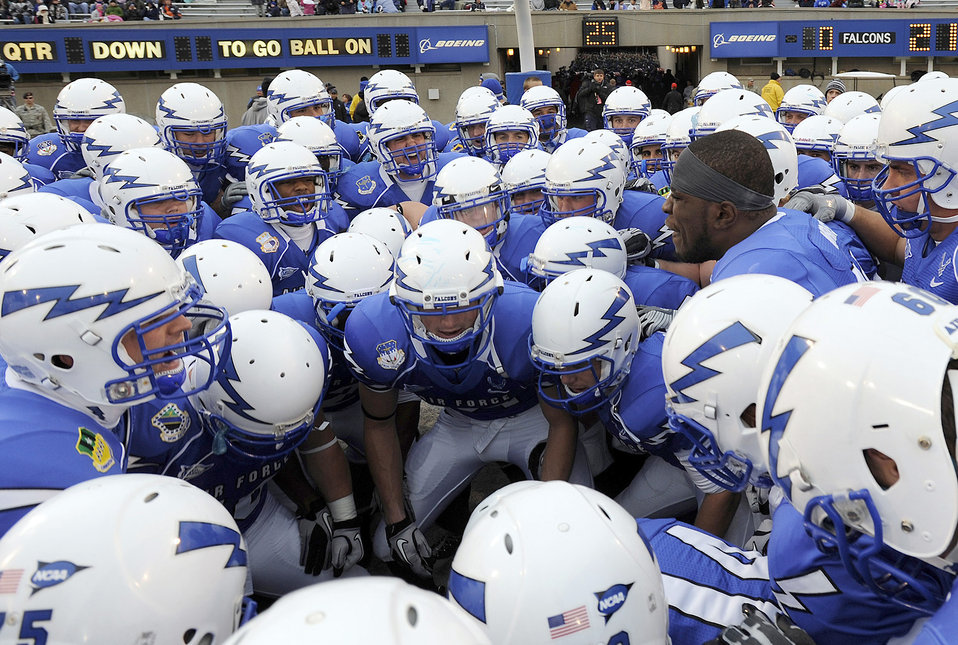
Let's huddle

Senior linebacker Andre Morris leads the Air Force Falcons in a huddle before the start of the last home game of the season against New Mexico Nov. 13, 2010, at Falcon Stadium in Colorado Springs, Colo.